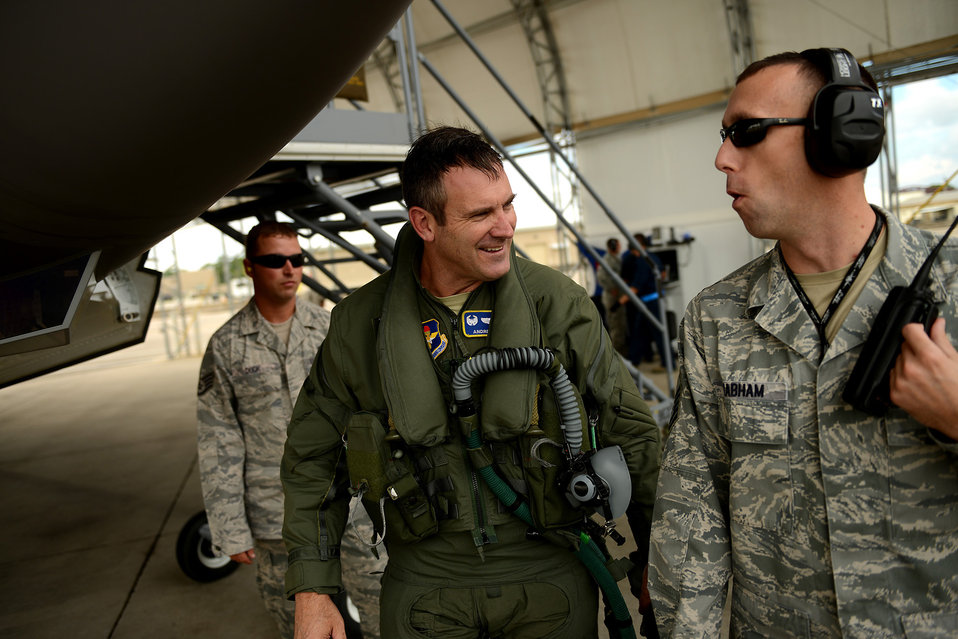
F-35A Lightning II joint strike fighter pilot wing commander Col. Andrew Toth from the 33rd Fighter Wing and production superintendent Master Sgt. Scott Grabham talk about his flight after flying a local training mission over the Emerald Coast Sept. 18, 2012 Eglin Air Force Base, Fla.